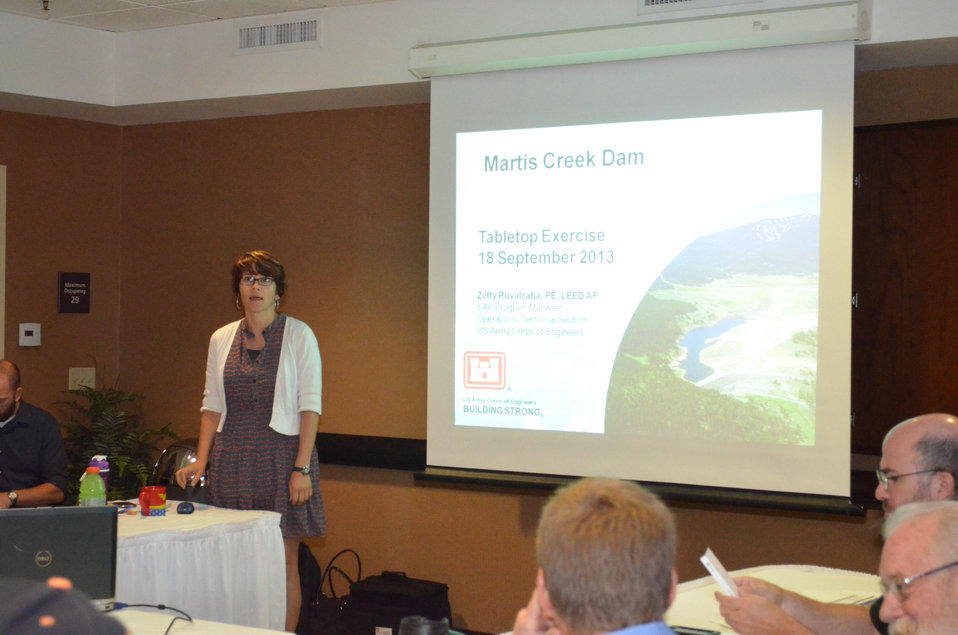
130918-A-QE425-004Corps conducts emergency response exercise at Martis Creek Dam

Zeffy Ruvalcaba, Emergency Action Plan program manager for the U.S. Army Corps of Engineers Sacramento District, outlines an emergency scenario to representatives from the Corps and other federal, state and local agencies as part of an emergency response exercise Sept.19, 2013 in Truckee, Calif. The exercise provided participants an opportunity to evaluate and improve emergency response plans associated with the dam. Each year, the Corps deploys hundreds of employees to respond to disasters around the world; sustaining lives with critical commodities; providing technical expertise; and assessing and restoring critical infrastructure.